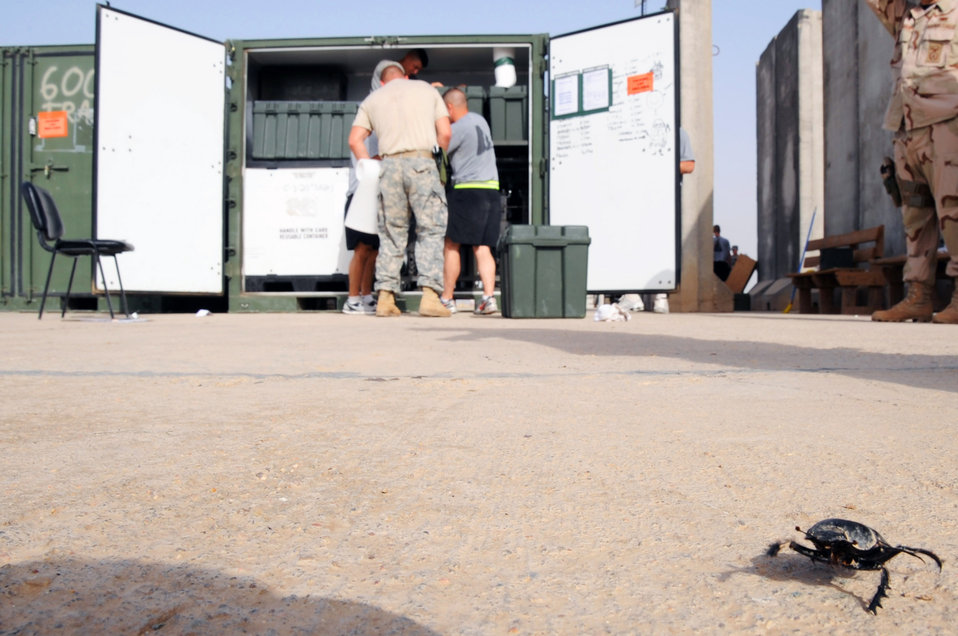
Ali Airmen keep creepy crawlies contained

A beetle runs away after being discovered hiding in cargo headed to the United States from Ali Base, Iraq. Military police Airmen inspect all cargo and equipment for soil, insects and other forms of life that could be a threat to ecosystems, agriculture and land in the United States.